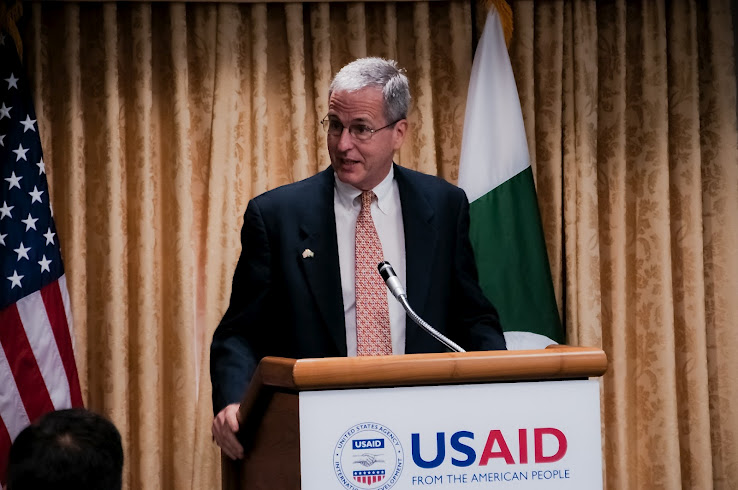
Jonathan Conly

WASHINGTON, D.C. – This week, Jonathan Conly was sworn in as the new U.S. Agency for International Development (USAID) Country Director for Pakistan. USAID Administrator Dr. Rajiv Shah presided over the ceremony and administered the oath in the presence of Mr. Conly’s family, friends, and colleagues, as well as members of the Pakistani-American community and the Pakistan Embassy’s Deputy Chief of Mission, Dr. Asad Majeed Khan.